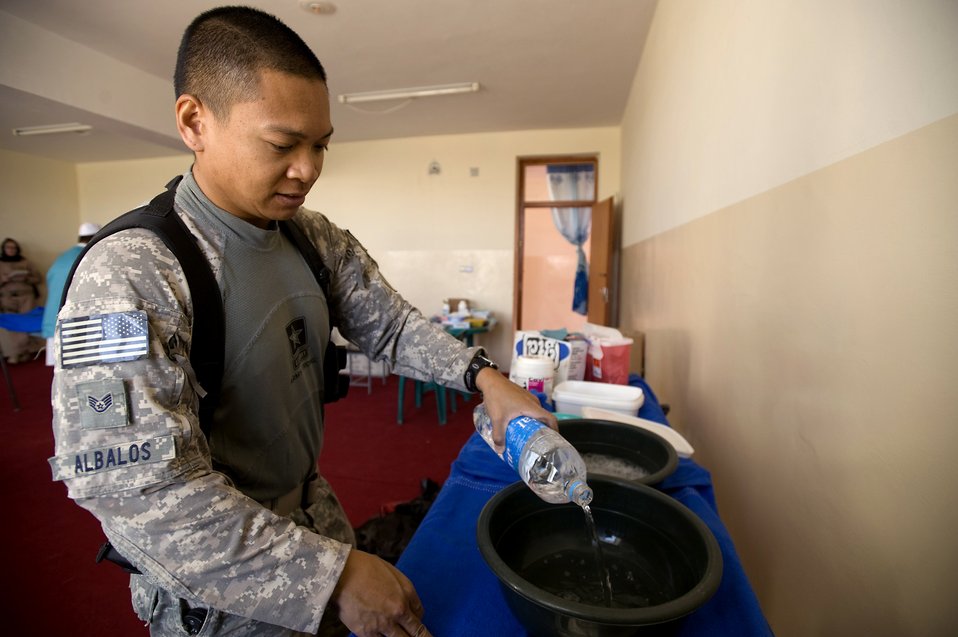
Servicemembers provide dental training for Afghans

Staff Sgt. Nestor Albalos prepares an infection control station to clean dental tools prior to a village dental outreach visit Oct. 11 in Zabul, Afghanistan. The visit was hosted by the Zabul Provincial Reconstruction Team. Sergeant Albalos, a PRT combat medic, assisted in the removal of teeth and sanitized tools during the visit. Sergeant Albalos, a native of Stockton, Calif., is from Travis Air Force Base, Calif.